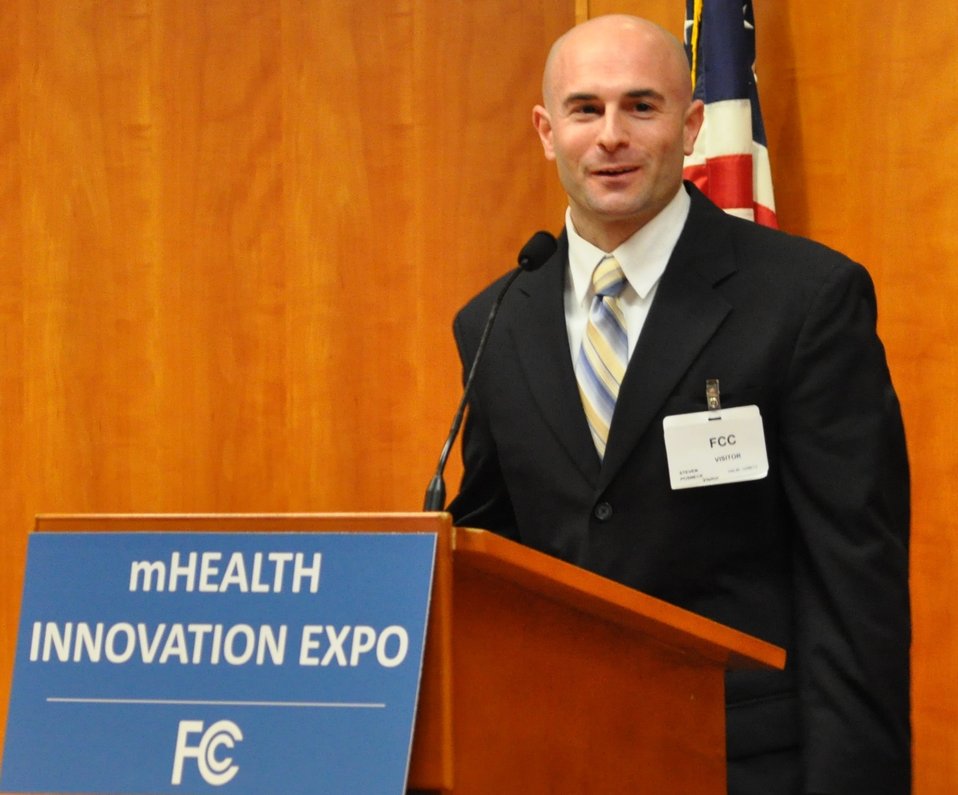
12.6.13 mHealth Innovation Expo

Steve Posnack, Director, Federal Policy Division, Office of the National Committee for Health IT (ONC)